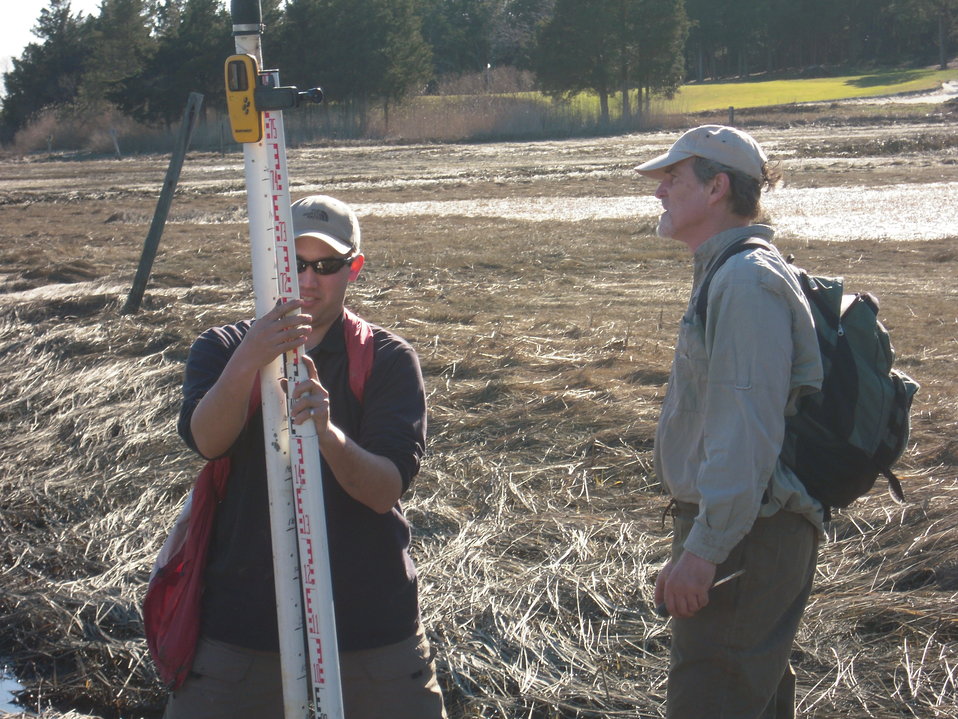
Measuring Sea Levels

Prof. David Burdick and an assistant measure sea levels at E.B. Forsythe NWR.